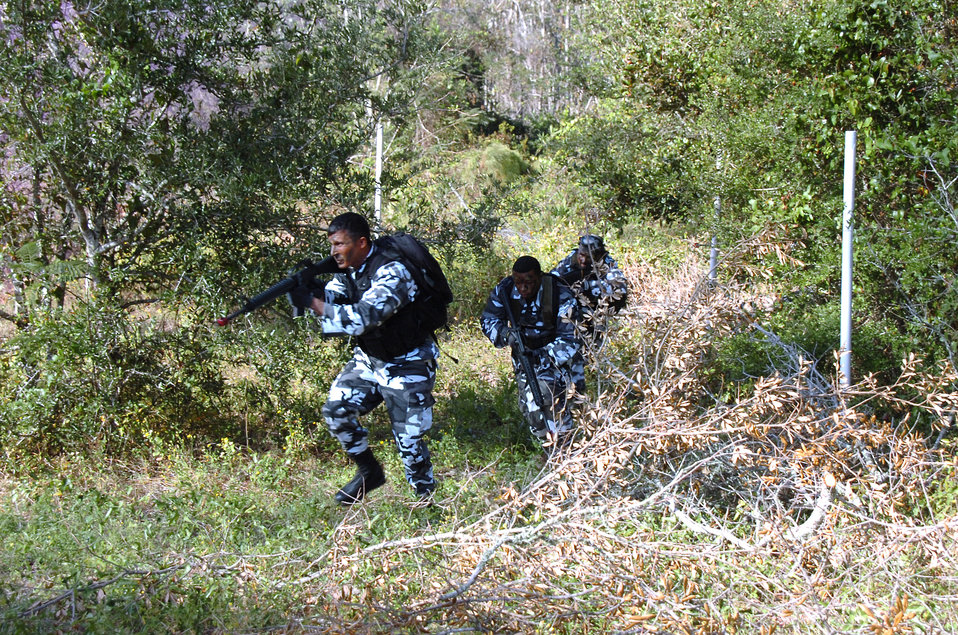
Mock attack

EGLIN AIR FORCE BASE, Fla. -- Staff Sgt. Jason Libman and Senior Airman Renaldo Miller lead an